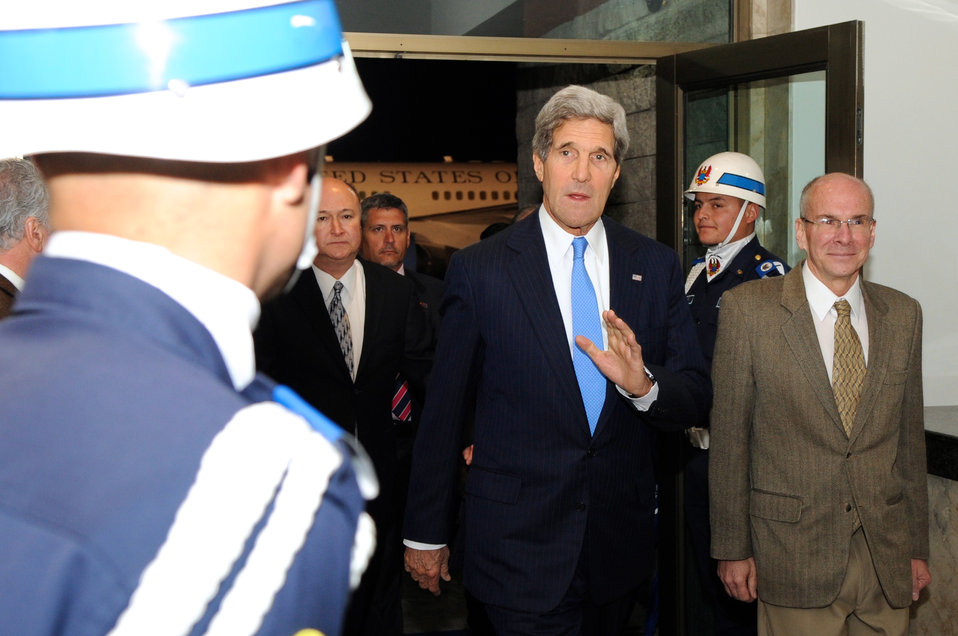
Secretary Kerry Arrives in Bogota, Colombia

U.S. Secretary of State John Kerry, accompanied by U.S. Ambassador to Colombia Michael McKinley, waves to a member of an honor guard as he arrives in Bogota, Colombia, on August 11, 2013.